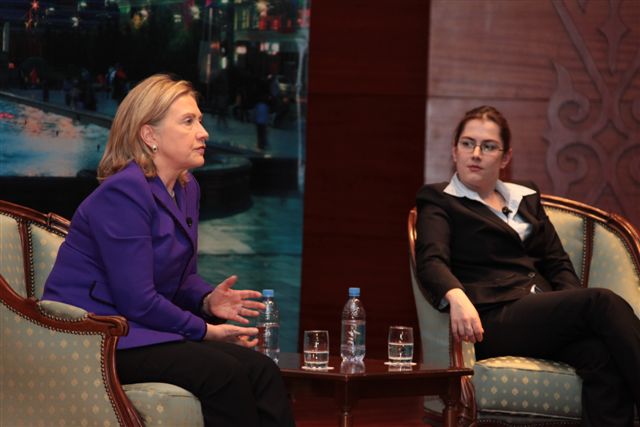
Secretary Clinton Participates in a Town Hall

U.S. Secretary of State Hillary Rodham Clinton participates in a Town Hall on Empowering Civil Society for Central Asia's Future at Eurasian University in Astana, Kazakhstan, on November 30, 2010.